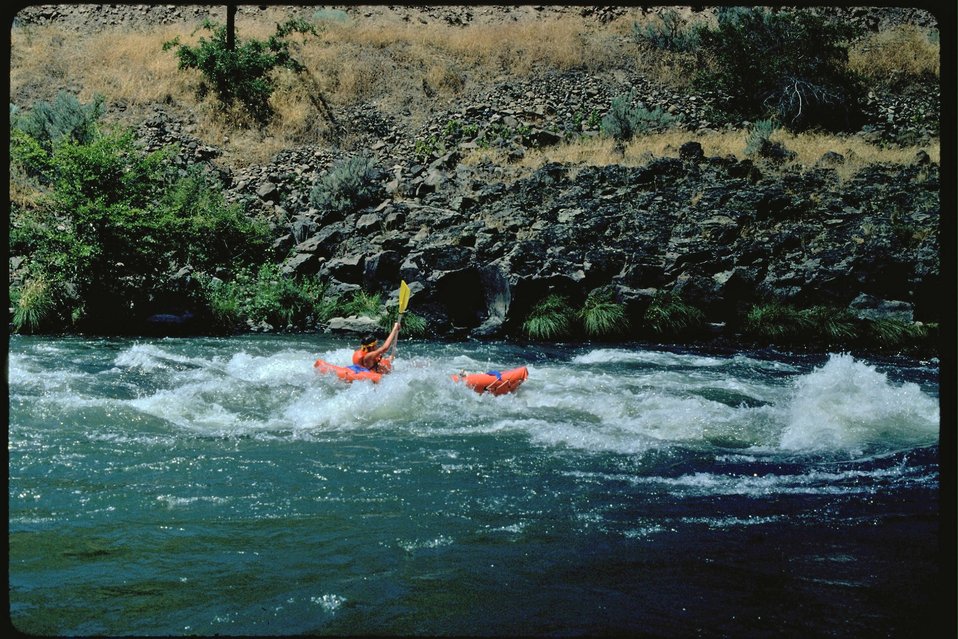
Someone kayaking on the Sandy River.